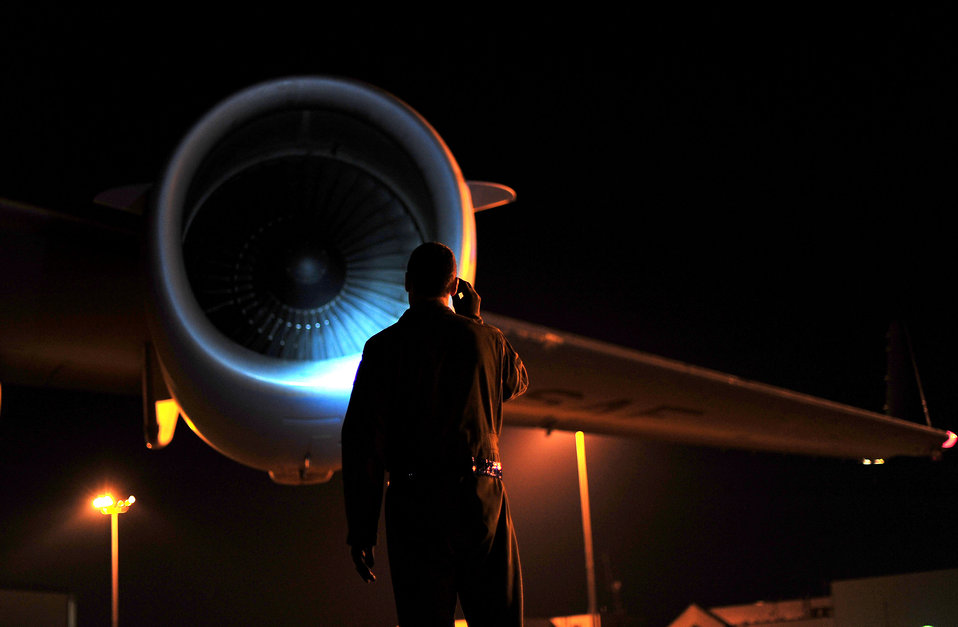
Check engine light

A C-17 Globemaster III pilot runs through pre-flight checklists during an operational readiness evaluation Oct. 26, 2011, in Gulfport, Miss. Airmen from the 437th Airlift Wing participated in the ORE, which was intended to evaluate mission effectiveness.